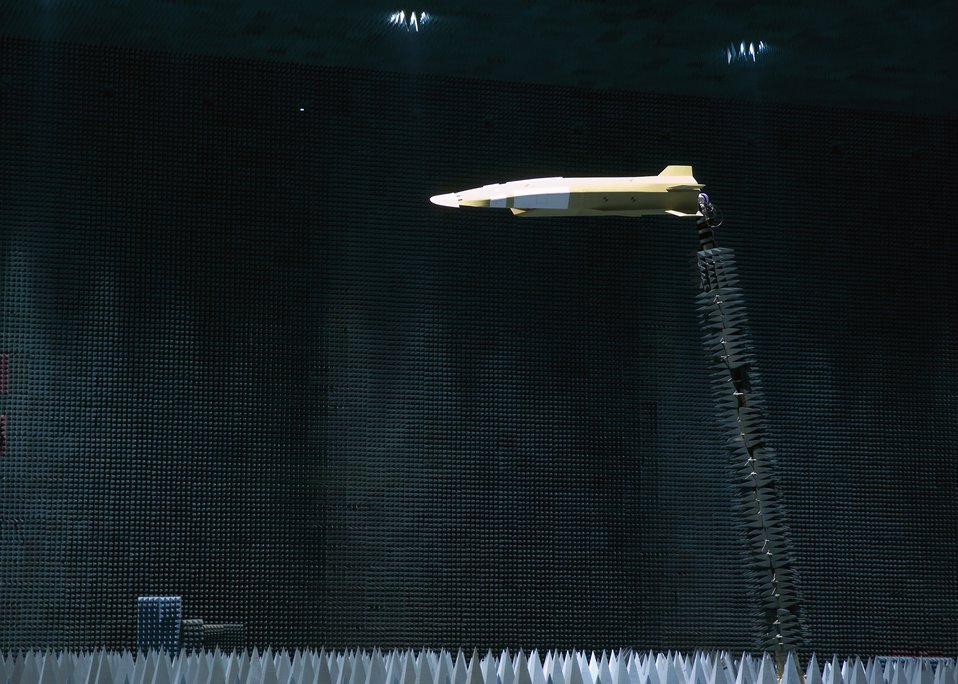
Air Force tests X-51 antennas

An X-51 Scramjet-Waverider mock-up hangs inside the Benefield Anechoic Facility during the vehicle's antenna testing Jan. 29 at Edwards Air Force Base, Calif. The 412th Test Wing Hypersonic Flight Test Team, Electronic Warfare and Boeing began the month-long testing Jan. 28.